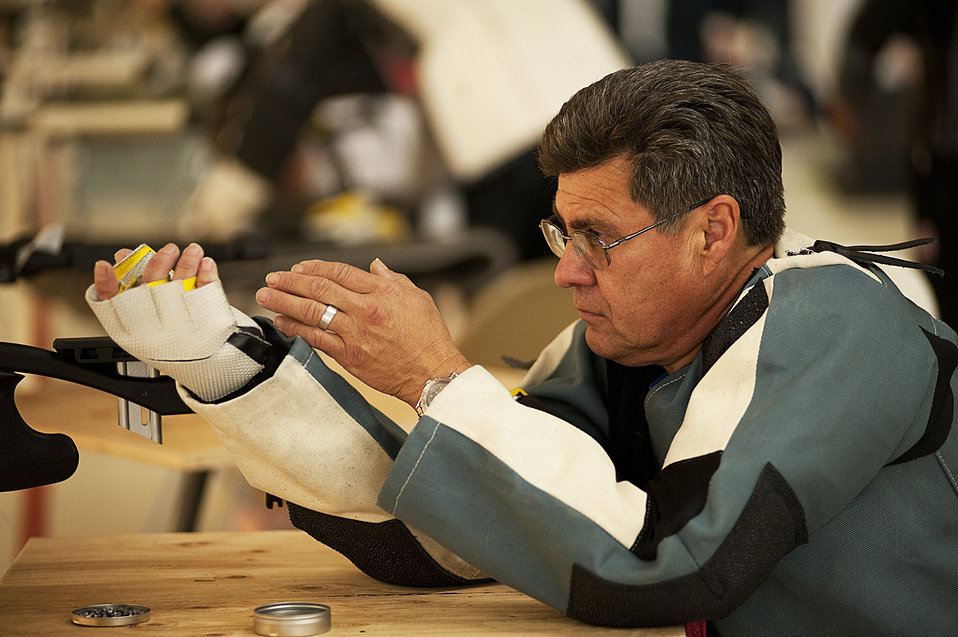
Warrior Games

Noel Sepulveda practices how to hold his rifle before a shooting competition during Warrior Games 2012 at the Olympic Training Center in Colorado Springs, Colo., May 3, 2012. Sepulveda is with the Air Force team.